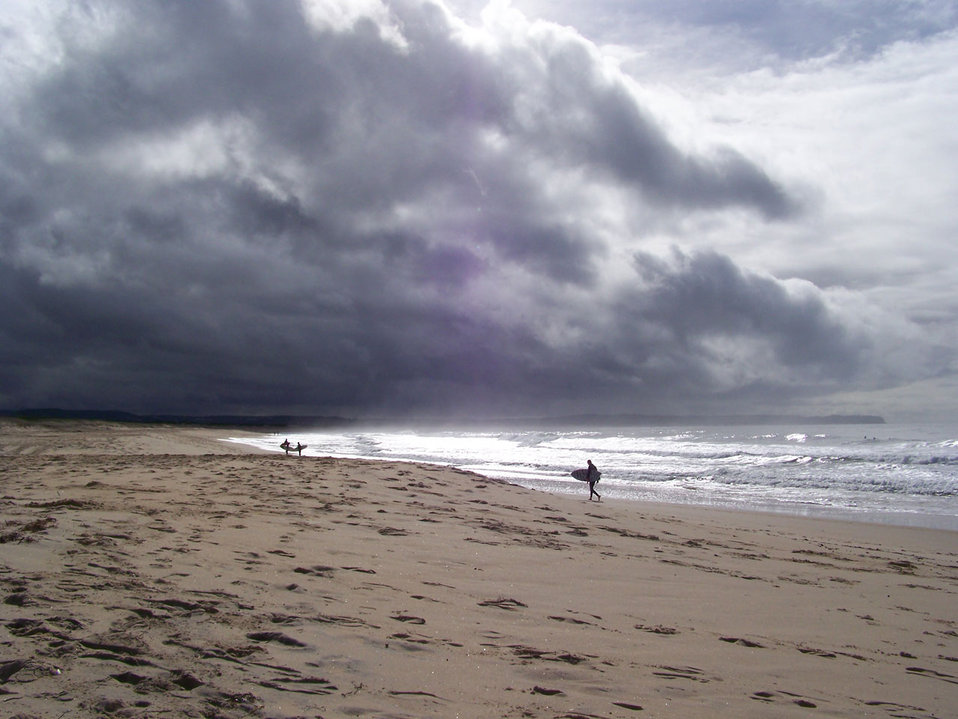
Stormy sea

Storm clouds on the shore.